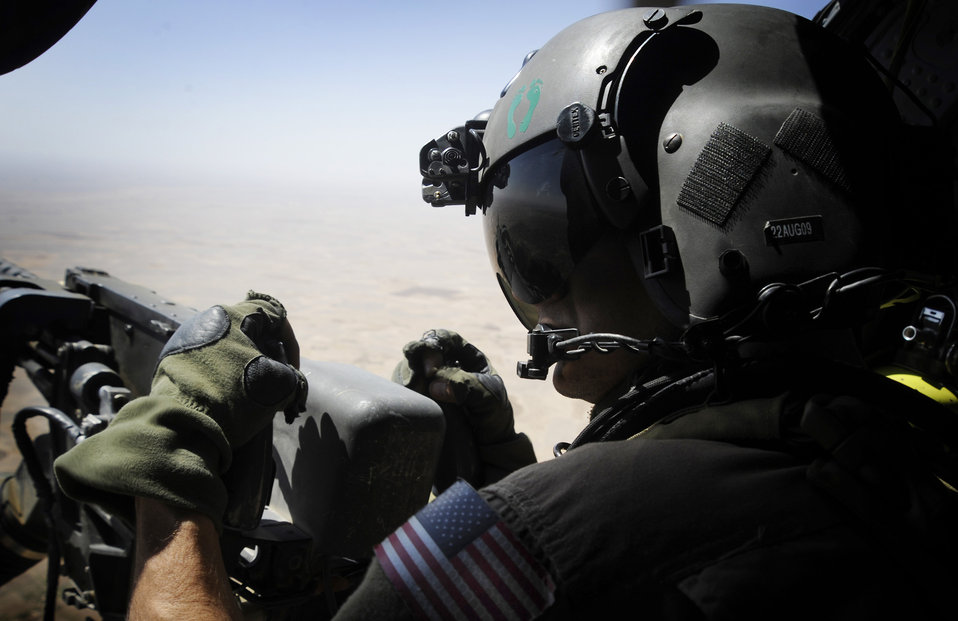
Aerial gunners provide cover for lifesaving mission

Staff Sgt. Sean Pellaton provides security during a medical evacuation mission June 26 over the Helmand Province, Afghanistan. Sergeant Pellaton is an aerial gunner with the 129th Expeditionary Rescue Squadron.